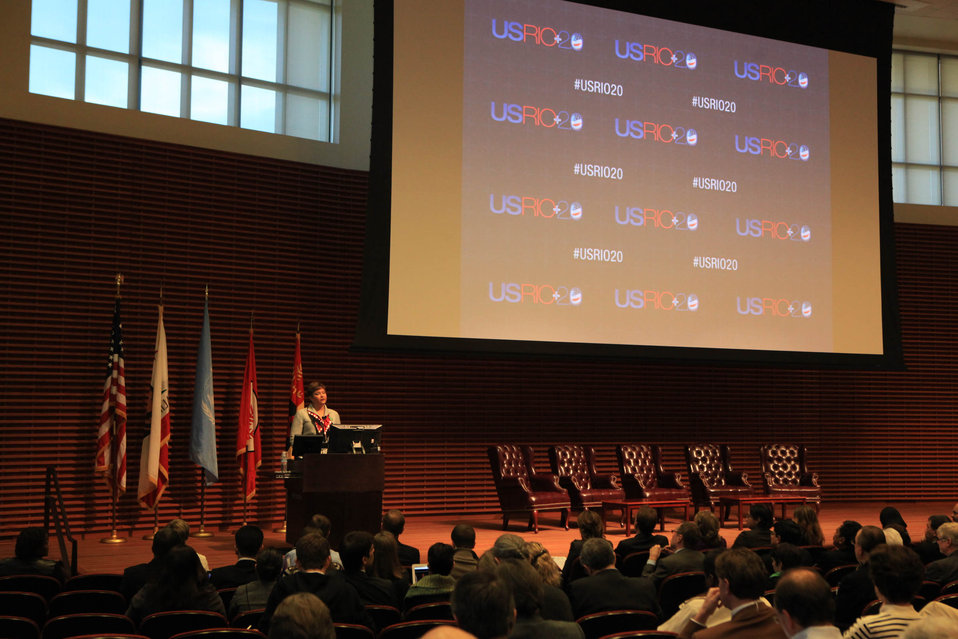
EPA Adminstrator Jackson Delivers Remarks

Environmental Protection Agency (EPA) Administrator Lisa P. Jackson delivers remarks at the USRIO 2.0 conference at the Stanford Graduate School of Business Knight Center in Stanford, California, on February 3, 2012.